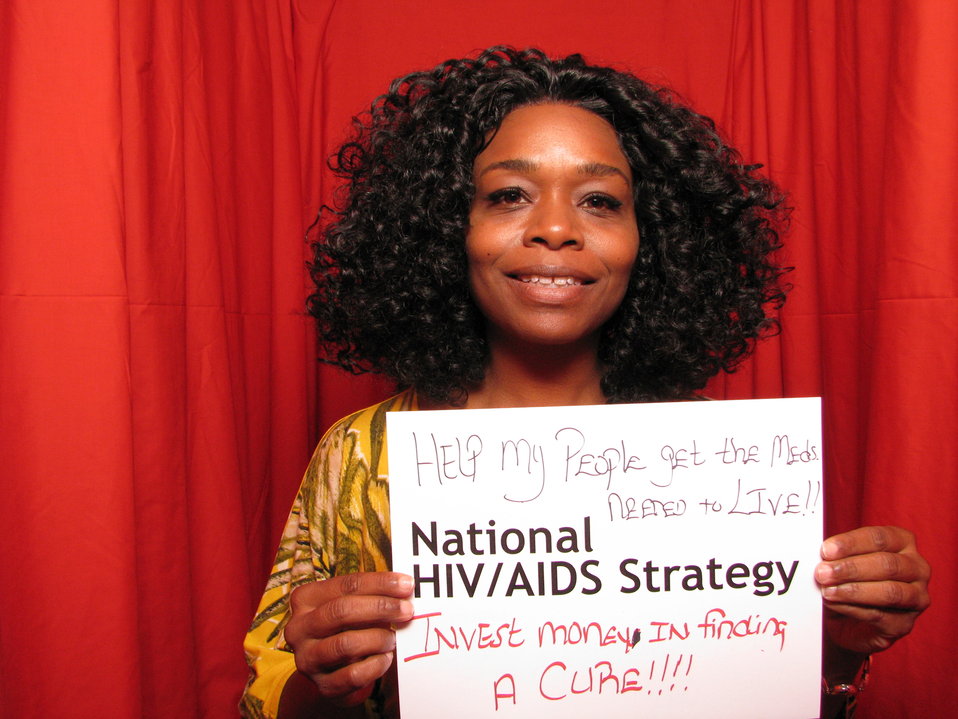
Help my people get the meds needed to LIVE!! National HIV AIDS Strategy Invest money in finding A CURE!!!!

From the AIDS.gov photo booth at the U.S. Conference on AIDS, September 2010 (Orlando, FL).